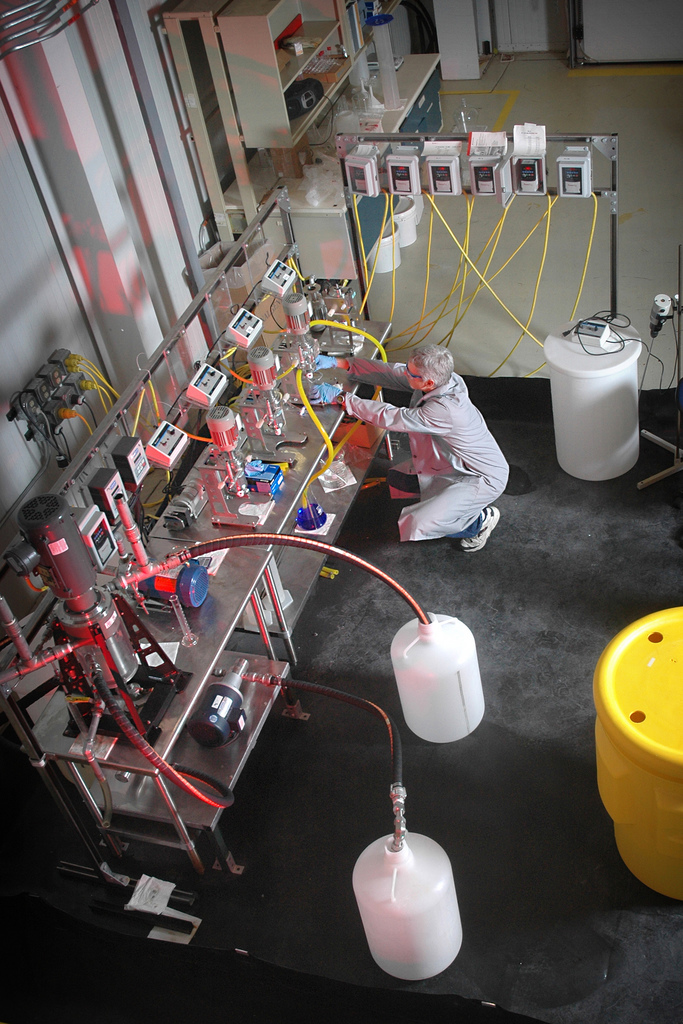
Radiochemical separation activity at Idaho National Laboratory.